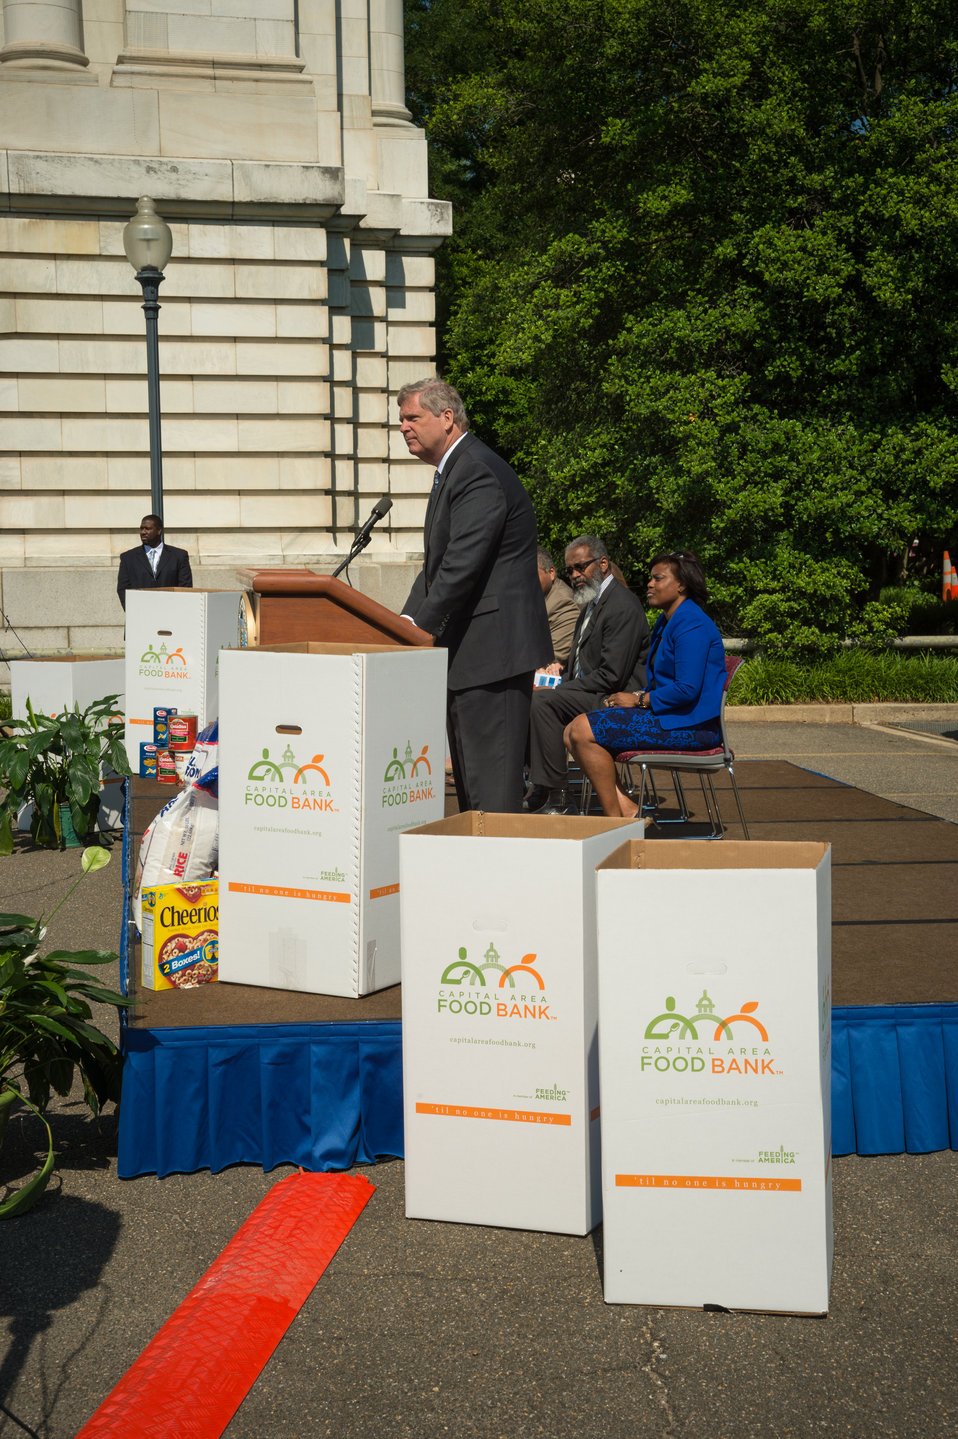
Agriculture Secretary Tom Vilsack announced the 2014 National Feds Feed Families Kick-Off at the United States Department of Agriculture’s (USDA) People’s Garden in Washington, DC, Mon. Jun. 2, 2014. The theme of this year’s event is, “Help Knock Out Hunger.” The USDA will lead the campaign with the support of the Chief, Human Capital Officers Council and other agency partners, which officially begins on June 1 and will run through August 27, 2014. On stage behind Secretary Vilsack are Dr. Gregory Parham, Assistant Secretary for Administration and Karen Comfort, National Program Manager, Feds Feed Families.